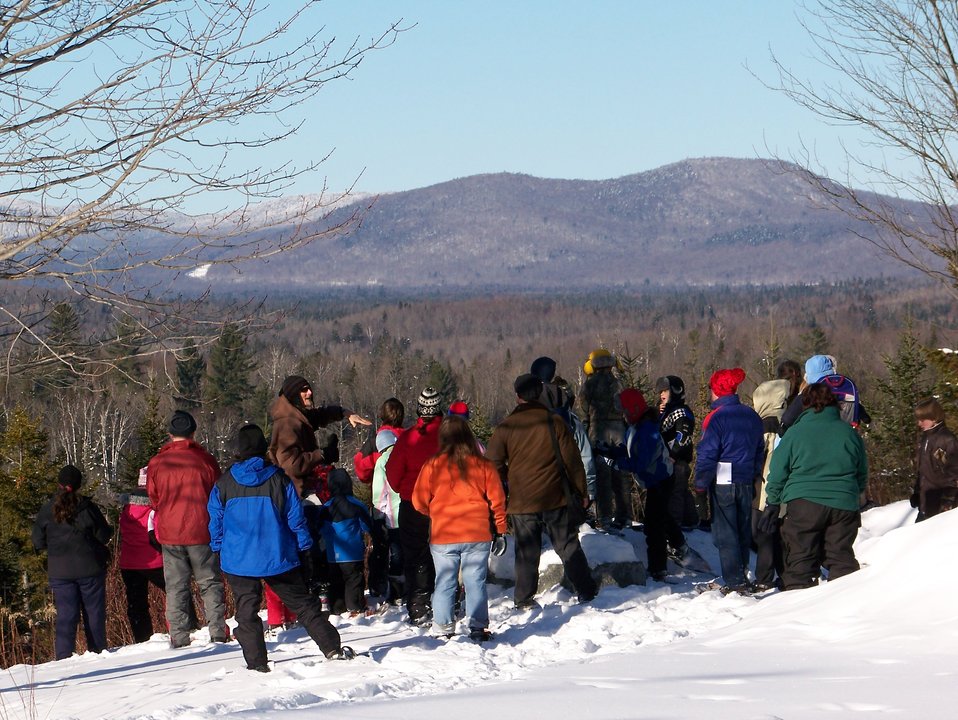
Siskin Ecological Adventures 2

Nulhegan Basin Division, Silvio O. Conte National Wildlife Refuge.